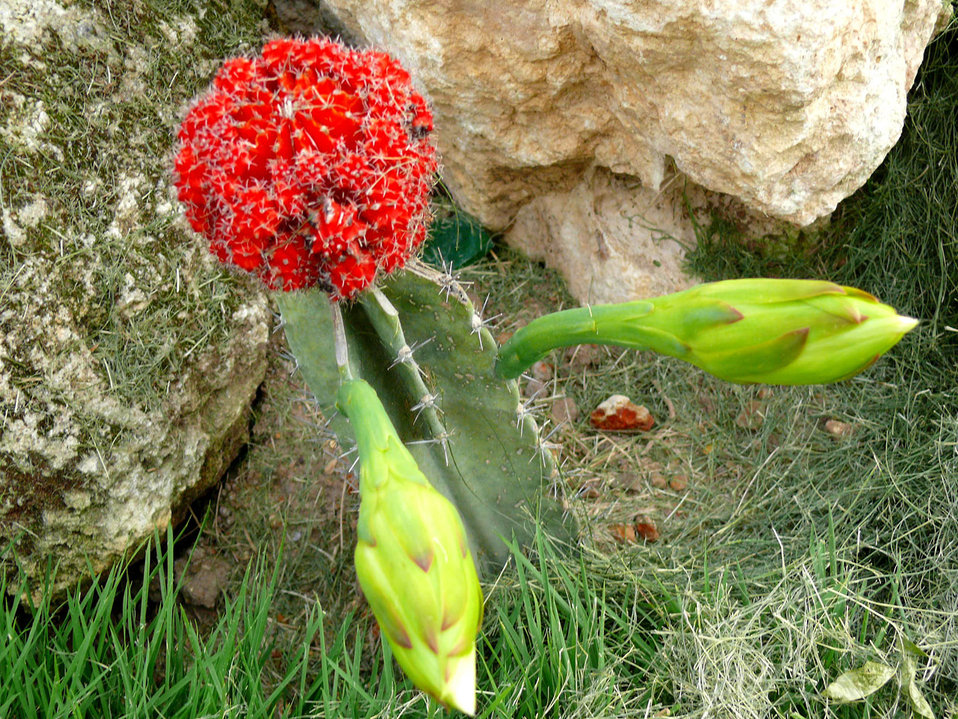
Cactus in nature environment.